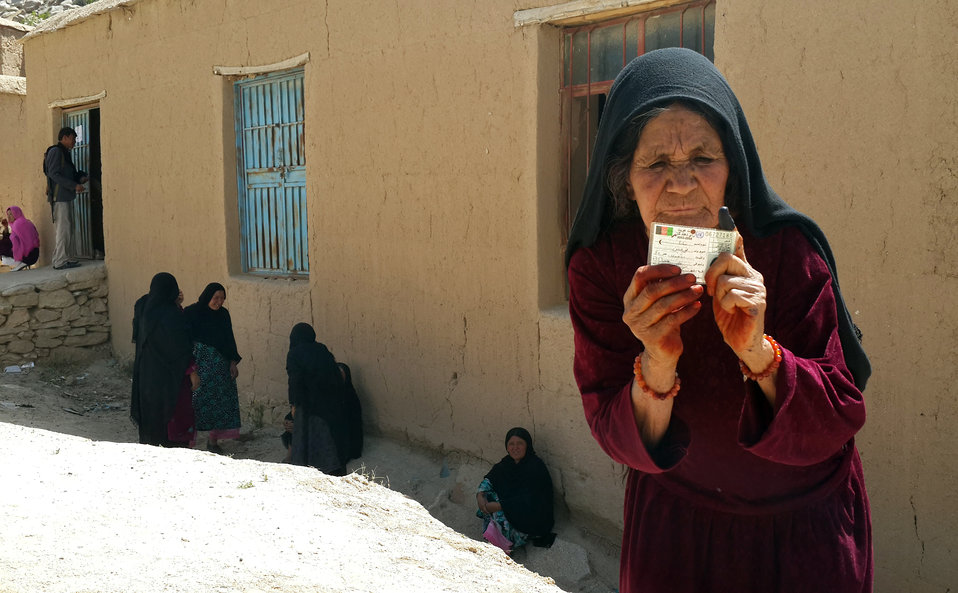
An elderly woman posing for a photo after casting her vote in Daikundi province.